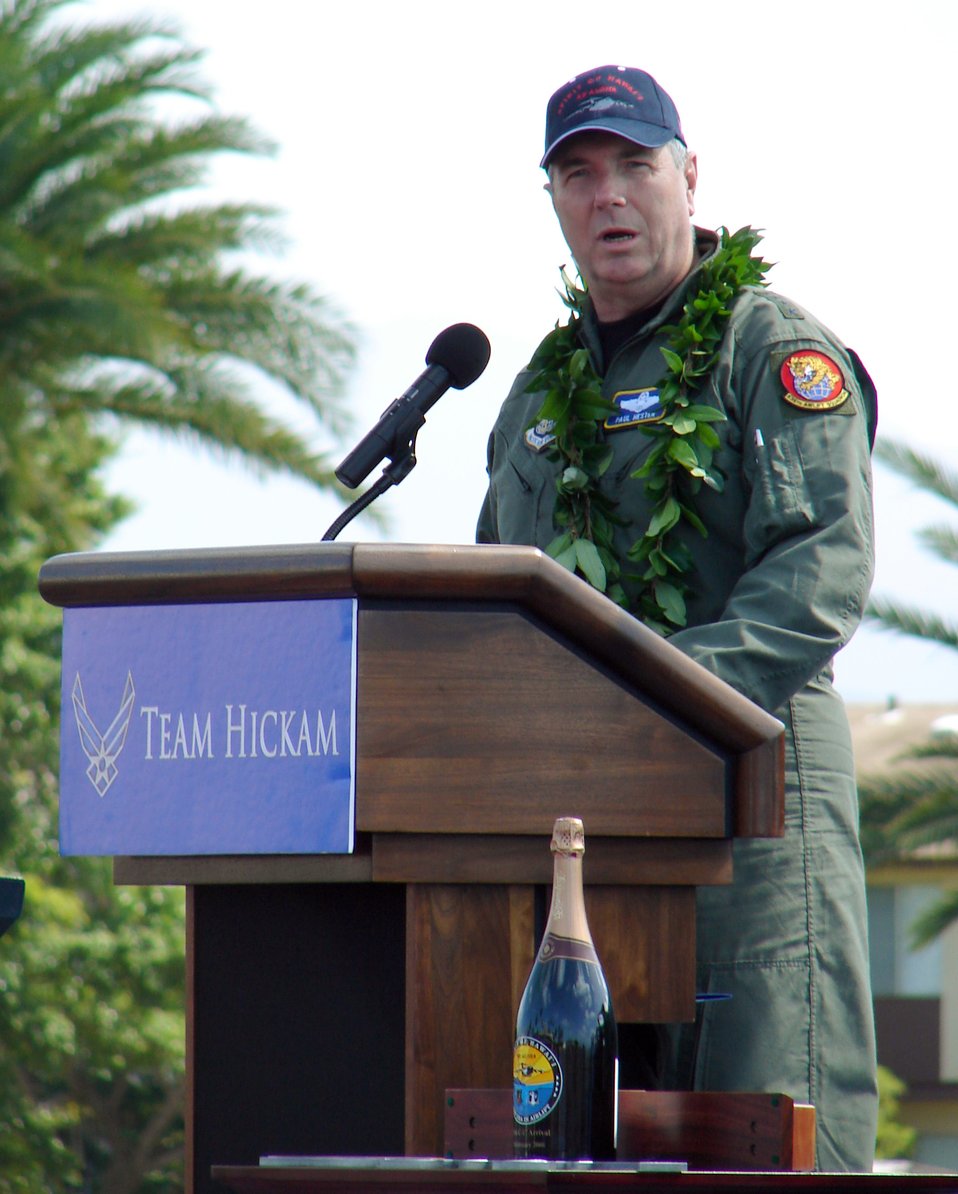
C-17 ceremony

HICKAM AIR FORCE BASE, Hawaii (AFPN) -- Gen. Paul V. Hester speaks on the significance of the C-17 during its welcome ceremony here.